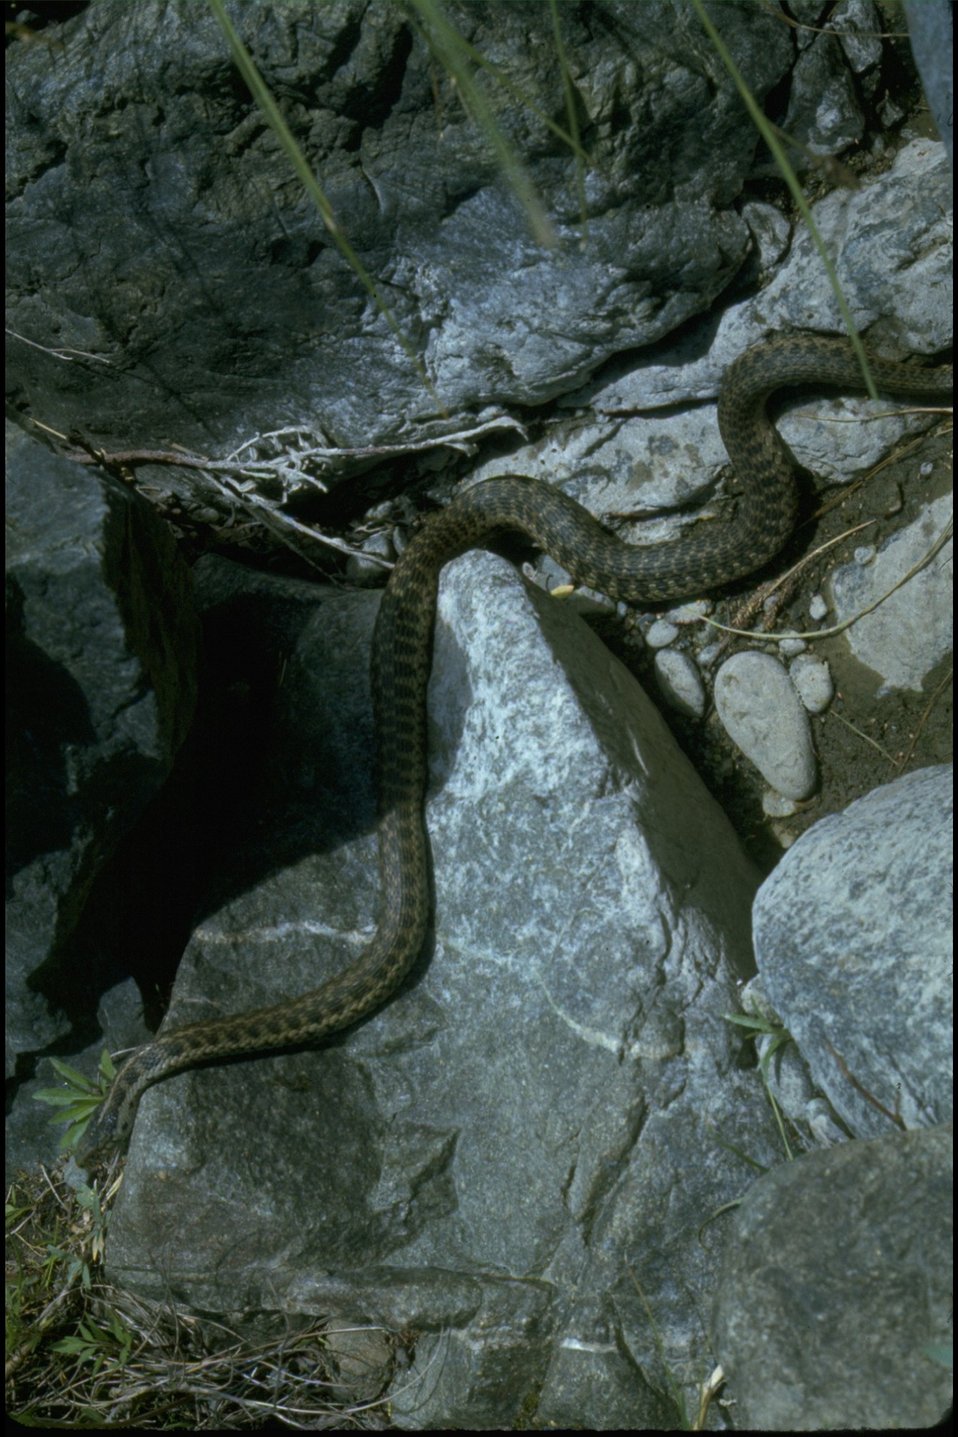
Rogue River - Snake.